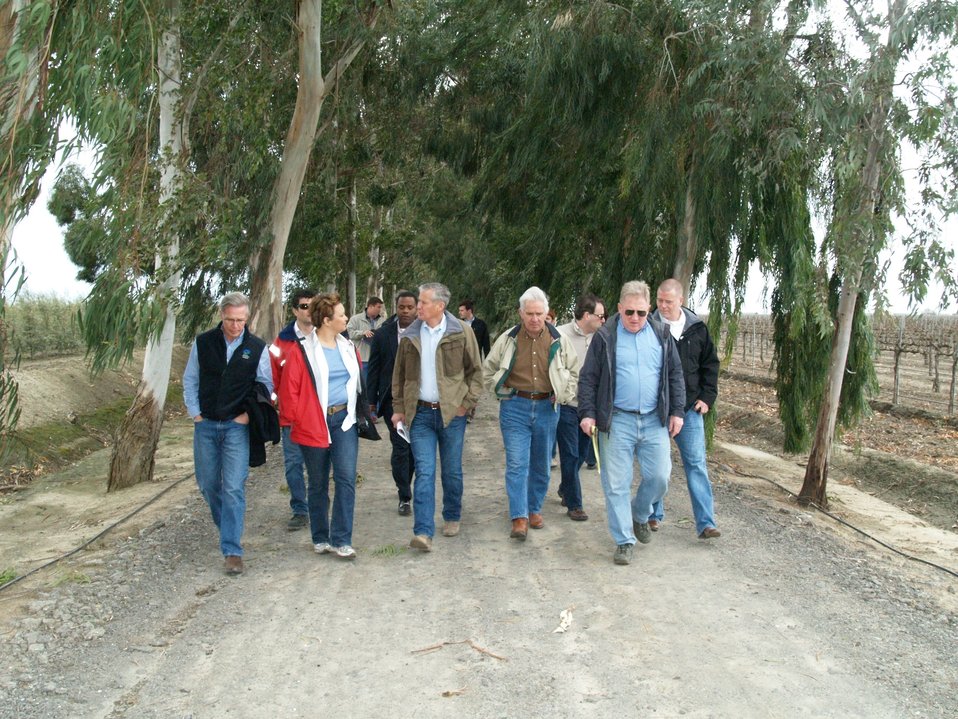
EPA Administrator tours Terranova Ranch, CA

Administrator Jackson (center) and EPA staff tour Terranova Ranch in California’s San Joaquin Valley. In addition to Wild Harvest tomatoes, Terranova farms and processes garlic, pima cotton, alfalfa hay, lettuce seed, broccoli seed, basil seed, and walnuts.